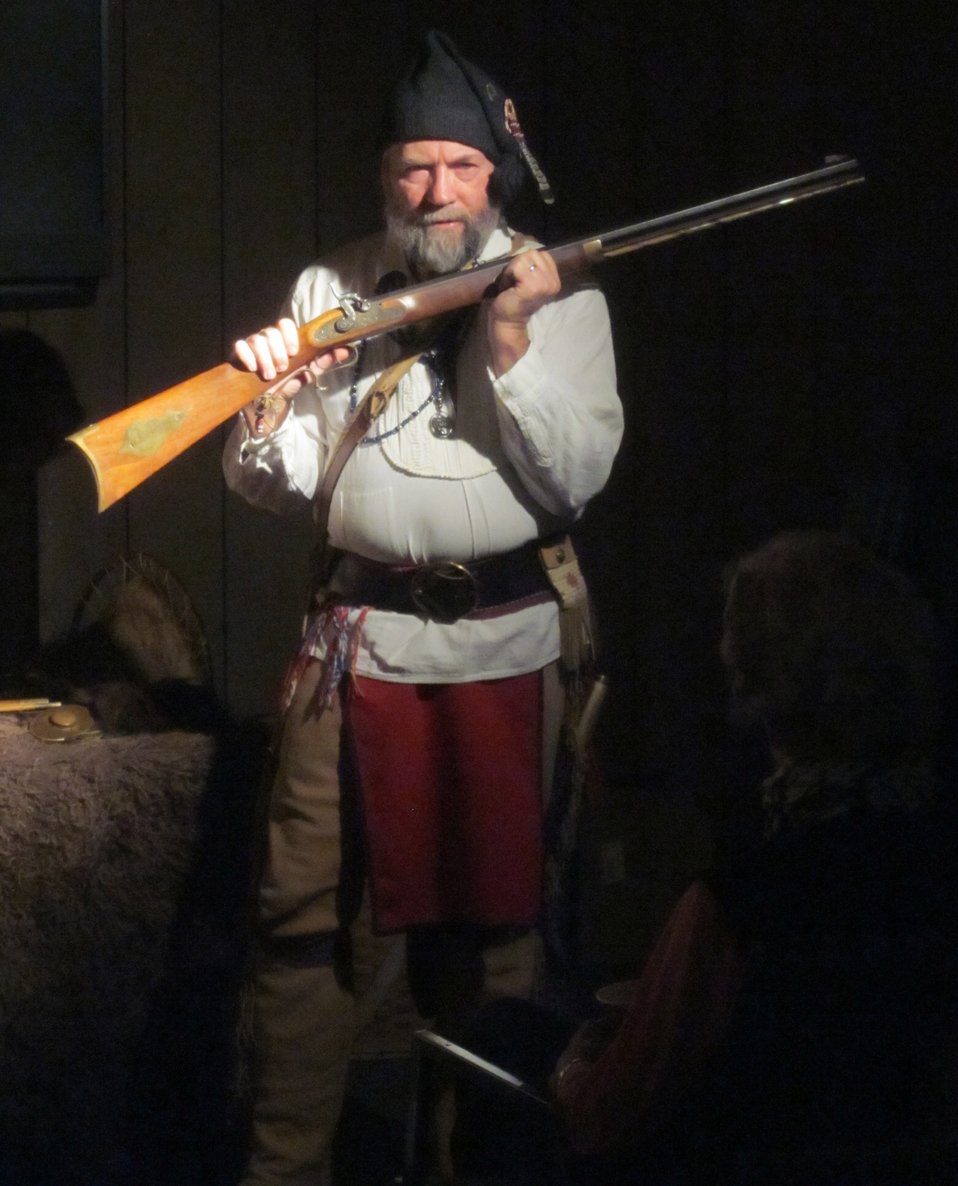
A History Lesson Comes Alive

Grand Teton National Park interpreter Andrew Langford gave a program at the Jackson Hole & Greater Yellowstone Visitor Center during a National Elk Refuge centennial program on February 20, 2012. Dressed in appropriate attire, Langford demonstrated many of the specialized skills required of the legendary trappers who lived and practiced their trade in Jackson Hole in the1820s and 1830s.